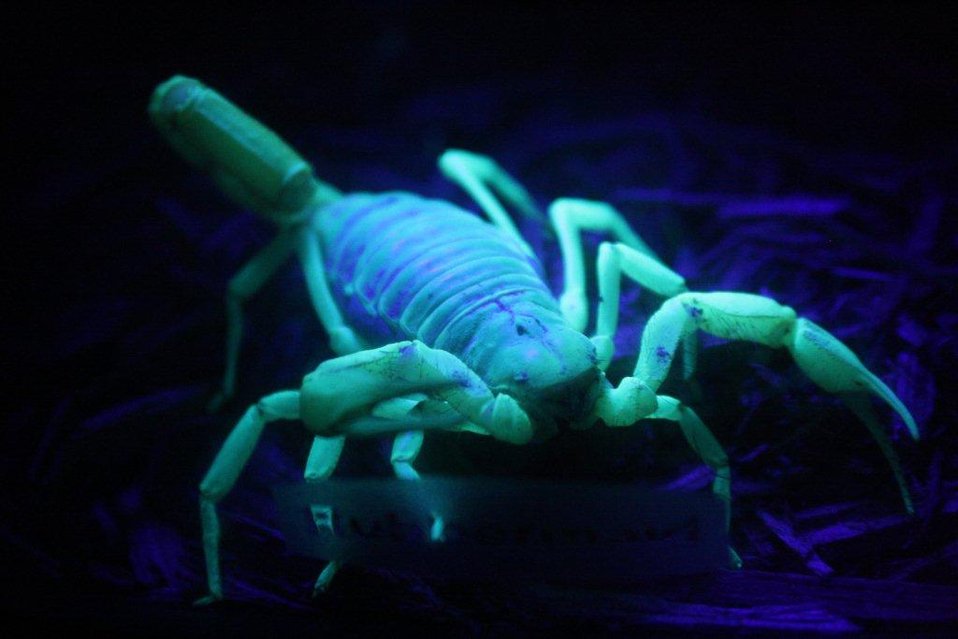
Scorpion in black light. 'Let's Explore After Dark' event, Ash Meadows National Wildlife Refuge. USFWS